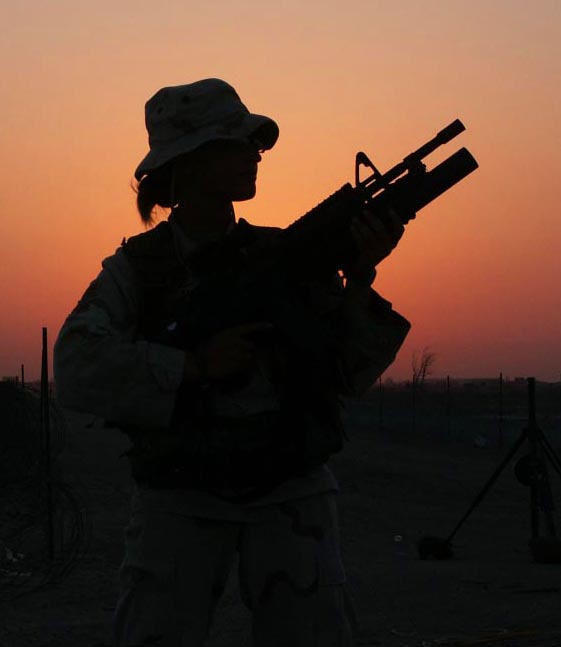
Pre-dawn patrol

TALLIL AIR BASE, Iraq -- Airman 1st Class Wednesday Brodenburger, 822nd Security Forces Squadron, completes a pre-dawn patrol near one of the interior perimeter fences. Members of the 822nd SFS, supporting Operation Iraqi Freedom, are beginning to return home after serving more than five months here.